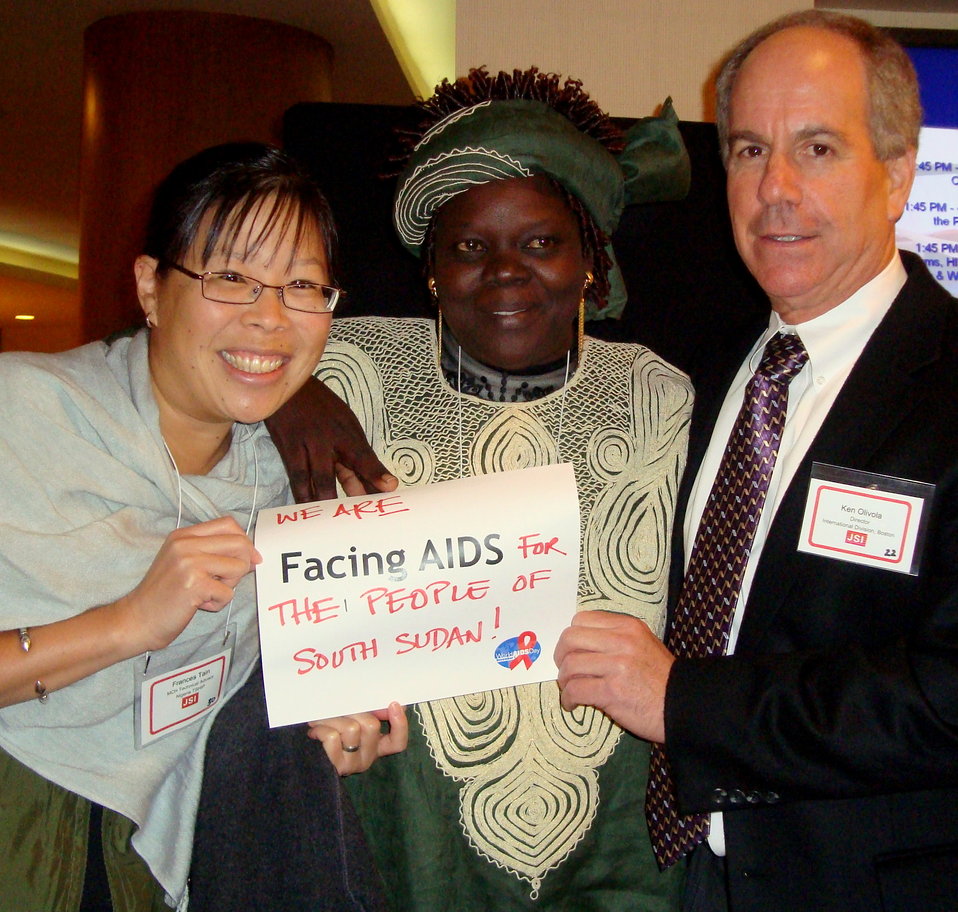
FacingAIDSCampaign 003